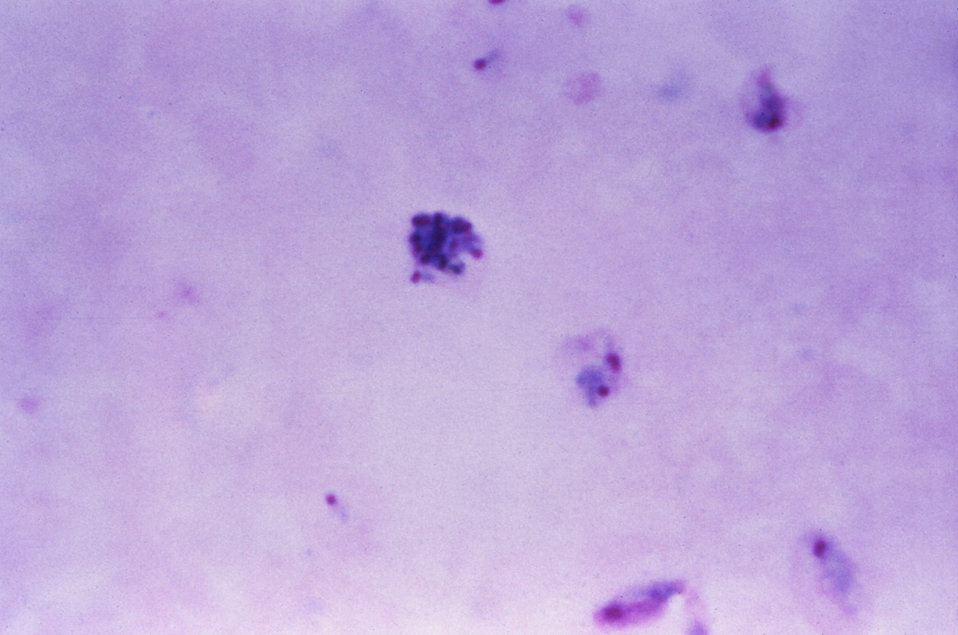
This thick film Giemsa stained micrograph shows a ring-form P. vivax trophozoite and some immature schizonts.